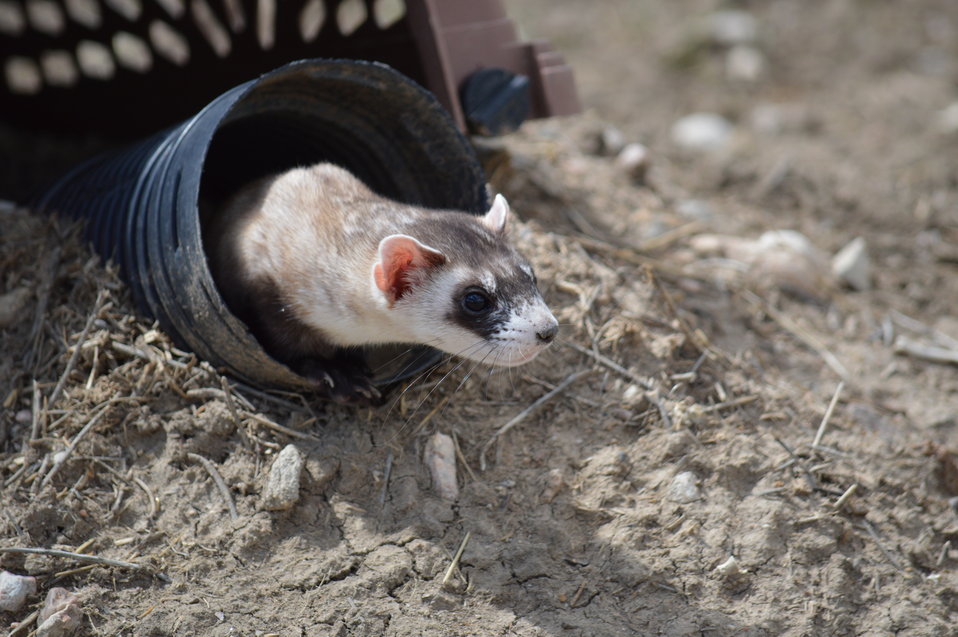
Interns visit the NBFFCC

In the summer of 2012, USFWS Region 6 interns visited the National Black-footed Ferret Conservation Center (NBFFCC) in Colorado to learn how the program reintroduces the endangered Black-footed ferret back into its native habitat.